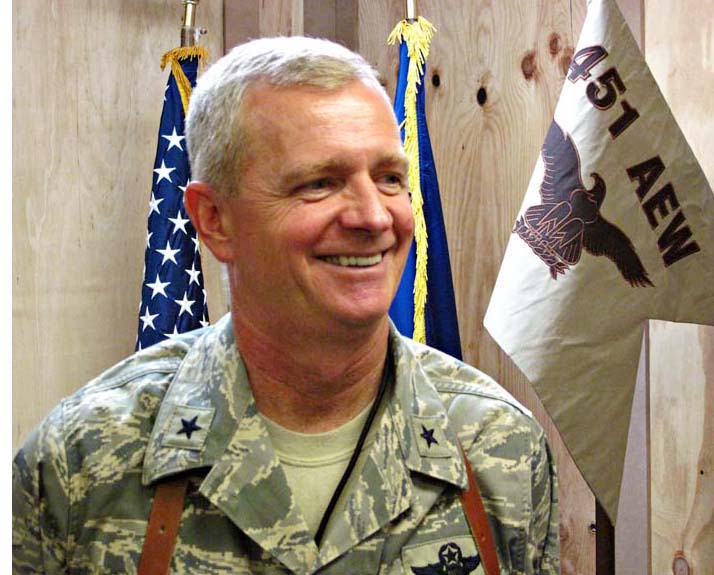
General takes to the sky in Afghanistan

Brig. Gen. Guy Walsh, a Maryland Air Guardsman from the 175th Airlift Wing in Baltimore, is the commander of the Air Force's newest air expeditionary wing in Afghanistan.